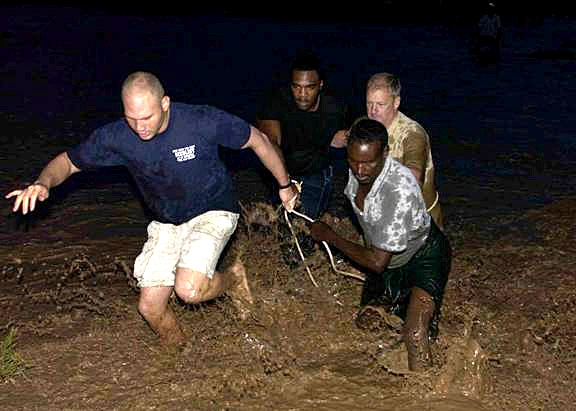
Veterinary mission morphs into lifesaving trek

(Clockwise from left) Army Sgt. Rovell Thomas, Senior Airman Travis Manning, Army Col. Vic Adamson, and a Djiboutian volunteer cross a raging river to rescue an injured teenager. Sergeant Thomas is assigned to Delta Company 1st Battalion, 3rd U.S. Infantry Regiment. Airman Manning is part of Combined Joint Task Force--Horn of Africa Combat Camera. Colonel Adamson is assigned to the 350th Civil Affairs Command Functional Specialty. The Combined Joint Task Force - Horn of Africa team was assessing a river crossing site they planned to use the following day as part of a veterinary civic action program when they saw a young man in need of help.